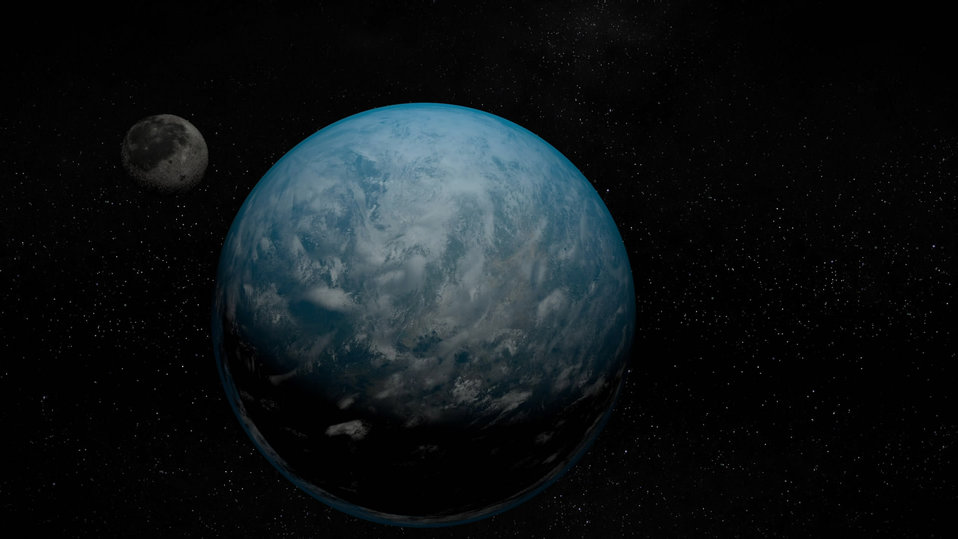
Moon and the earth from space

View from space to the moon and earth.